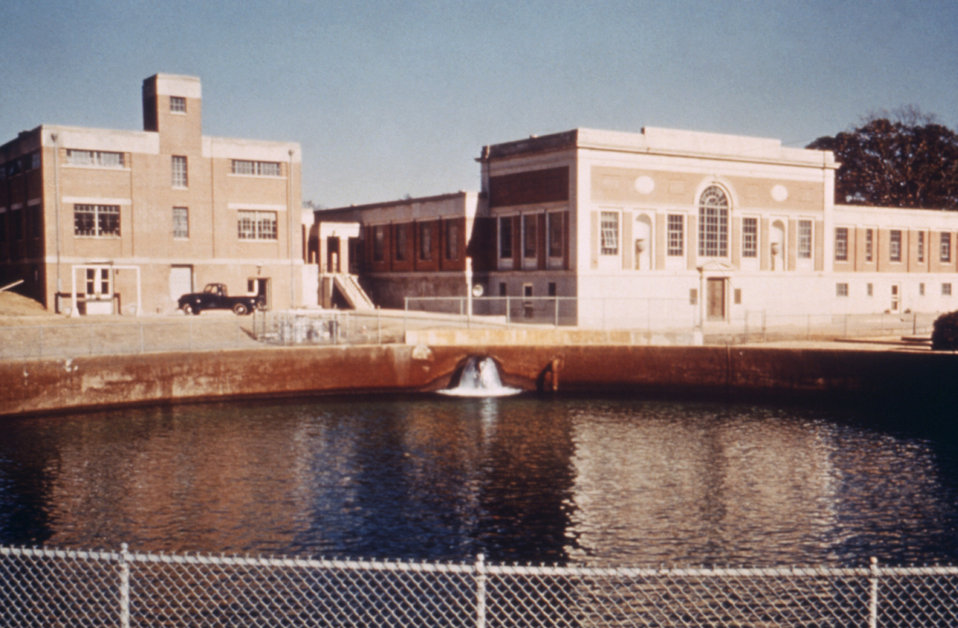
This 1976 photograph depicts the front of a basic water treatment plant.